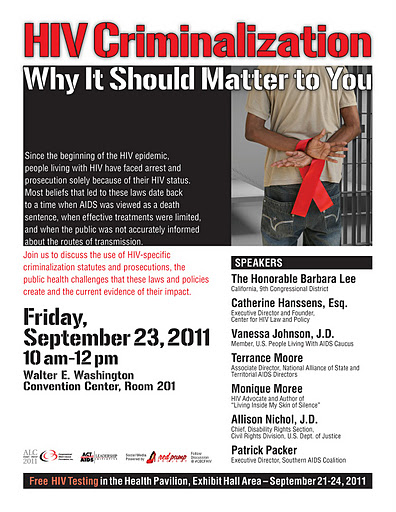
HIV Criminalization panel 9 23 11